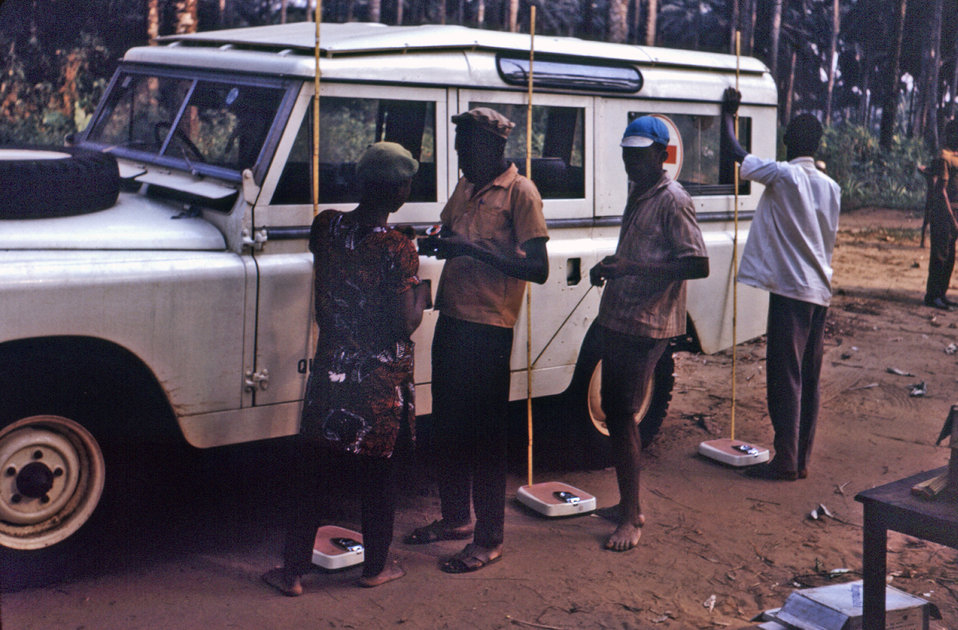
This 1968 photograph showed a 'weight and height measurement team' in place to assess the nutritional status of Biafran war refugees; subsequently they'd distribute ration cards that were redeemed for dry foods based on each refugee's dietary profile.